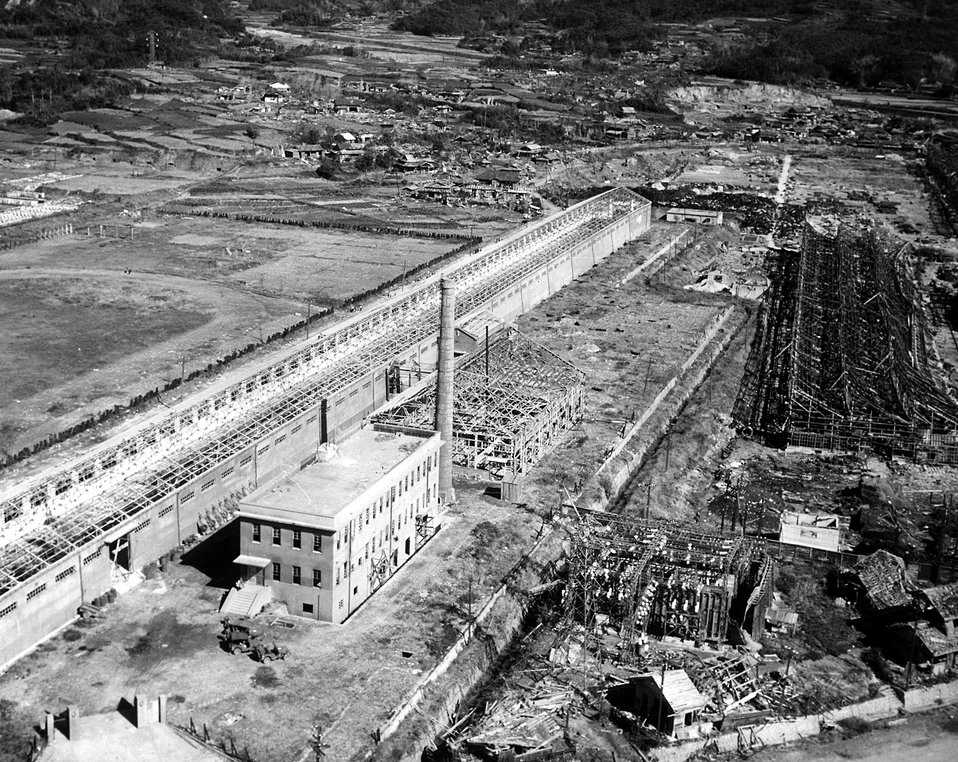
ATOMIC BOMBING OF JAPAN